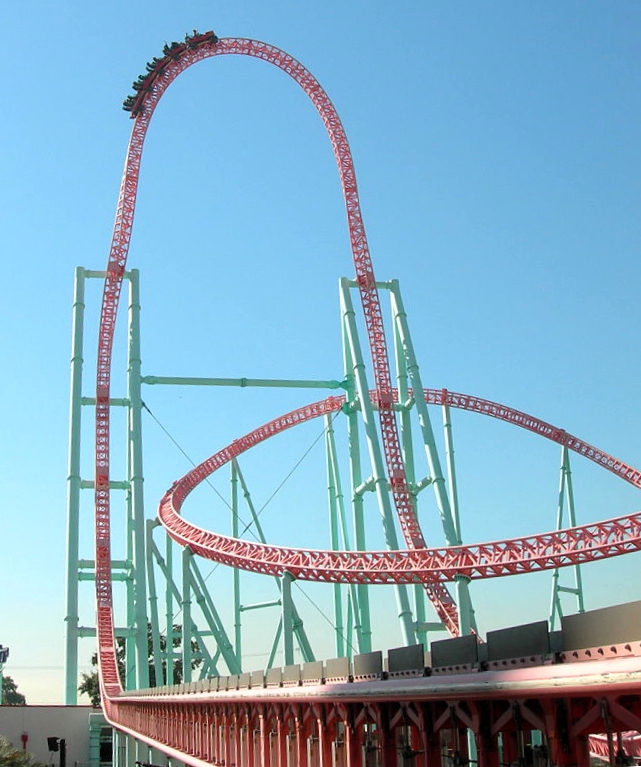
Deutsch: Zweitversion von File:Xcelerator 092005.jpg (de:Datei:Xcelerator.jpg in de.wikipedia) (begradigt, beschnitten, Tonwert)
Xcelerator, eine Stahlachterbahn (Launched Coaster) im US-amerikanischen Freizeitpark Knott's Berry Farm in Buena Park (Nähe Los Angeles). Reworked version of File:Xcelerator 092005.jpg (de:Datei:Xcelerator.jpg on de.wikipedia) (straightened, cropped, Tone)
Xcelerator, a steel launched roller coaster at Knott's Berry Farm in Buena Park, California.